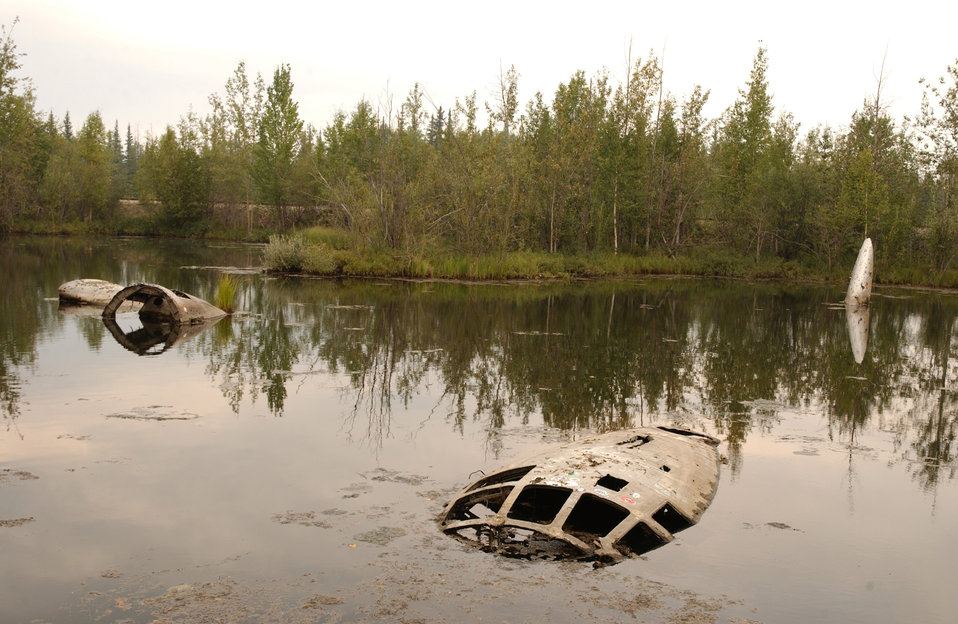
The Lady

EIELSON AIR FORCE BASE, Alaska -- The